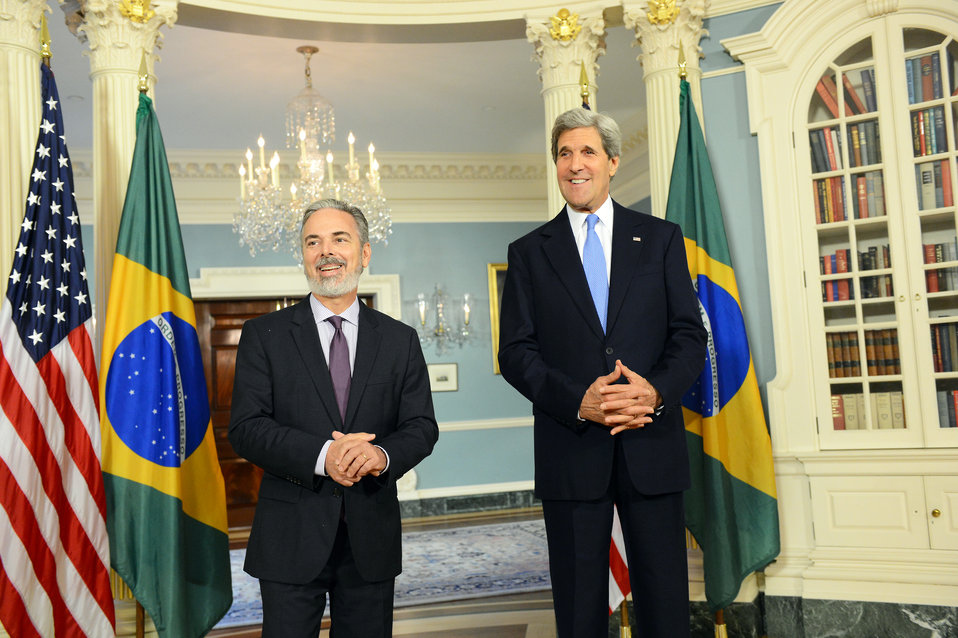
Secretary Kerry Meets With Brazilian Foreign Minister Patriota

U.S. Secretary of State John Kerry meets with Brazilian Foreign Minister Antonio de Aguiar Patriota at the U.S. Department of State in Washington, D.C., on May 20, 2013.